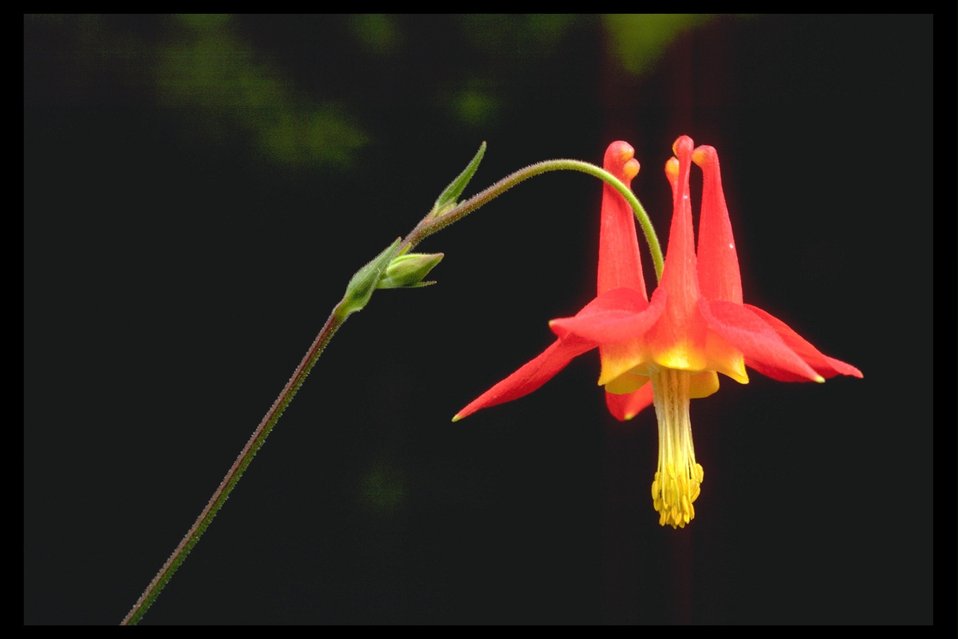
Close up of the Western Columbine (Aquilegia formosa) found along West Fork Trail Creek.